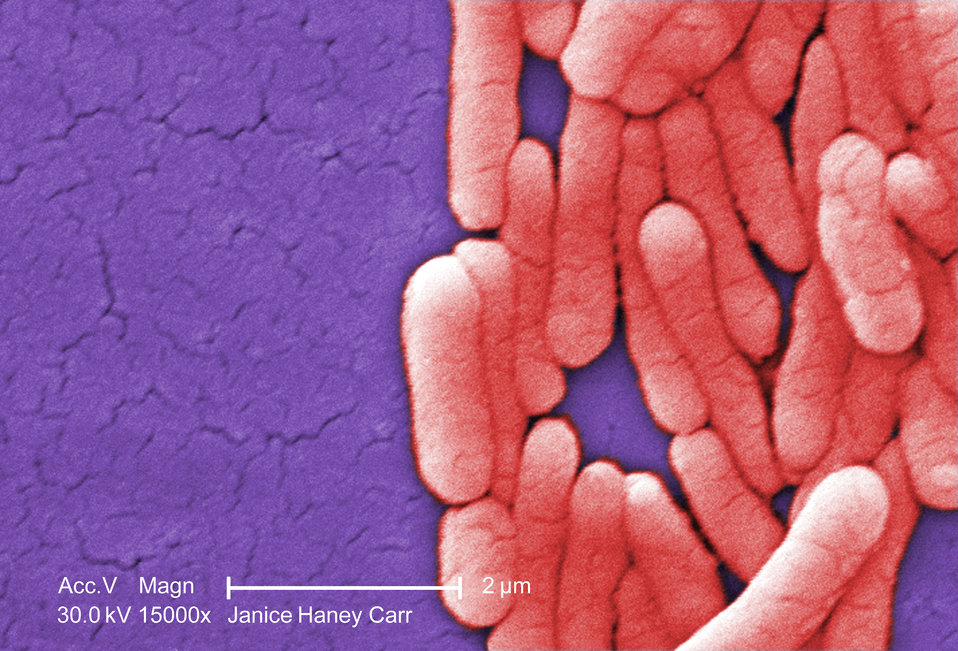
Under a very high magnification of 15000X, this colorized scanning electron micrograph (SEM) revealed the presence of numbers of clustered Gram-negative Salmonella typhimurium bacteria, which had been grown in a pure culture. See PHIL 10973 for a black and white version of this image.What sort of germ is Salmonella?